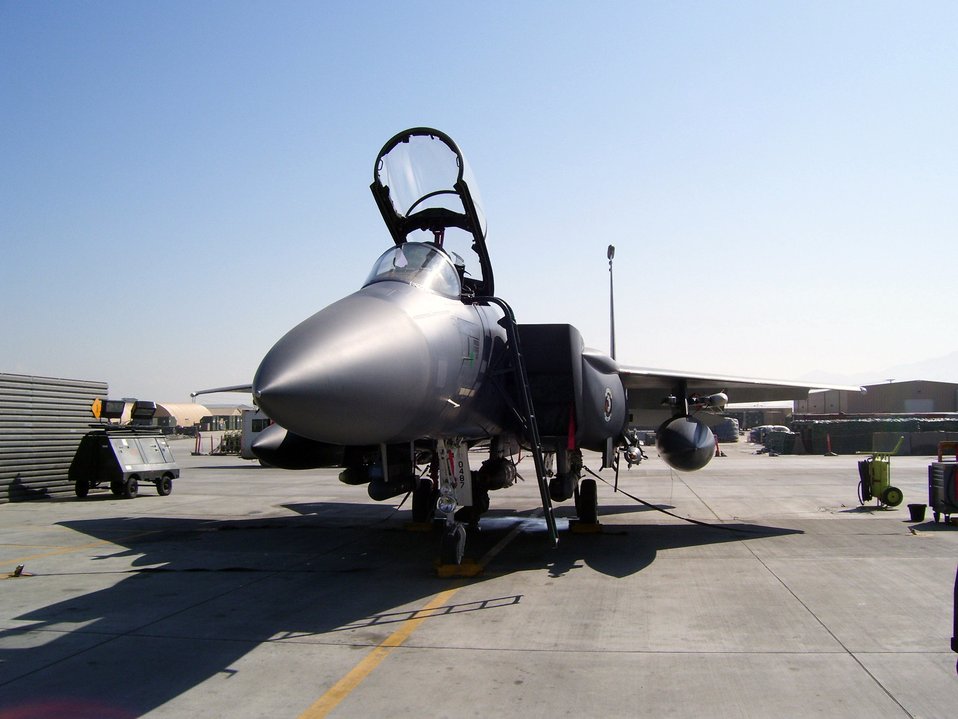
April 28 airpower summary: F-15s fly support missions

An F-15E Strike Eagle is ready for its close-air-support mission over Afghanistan.